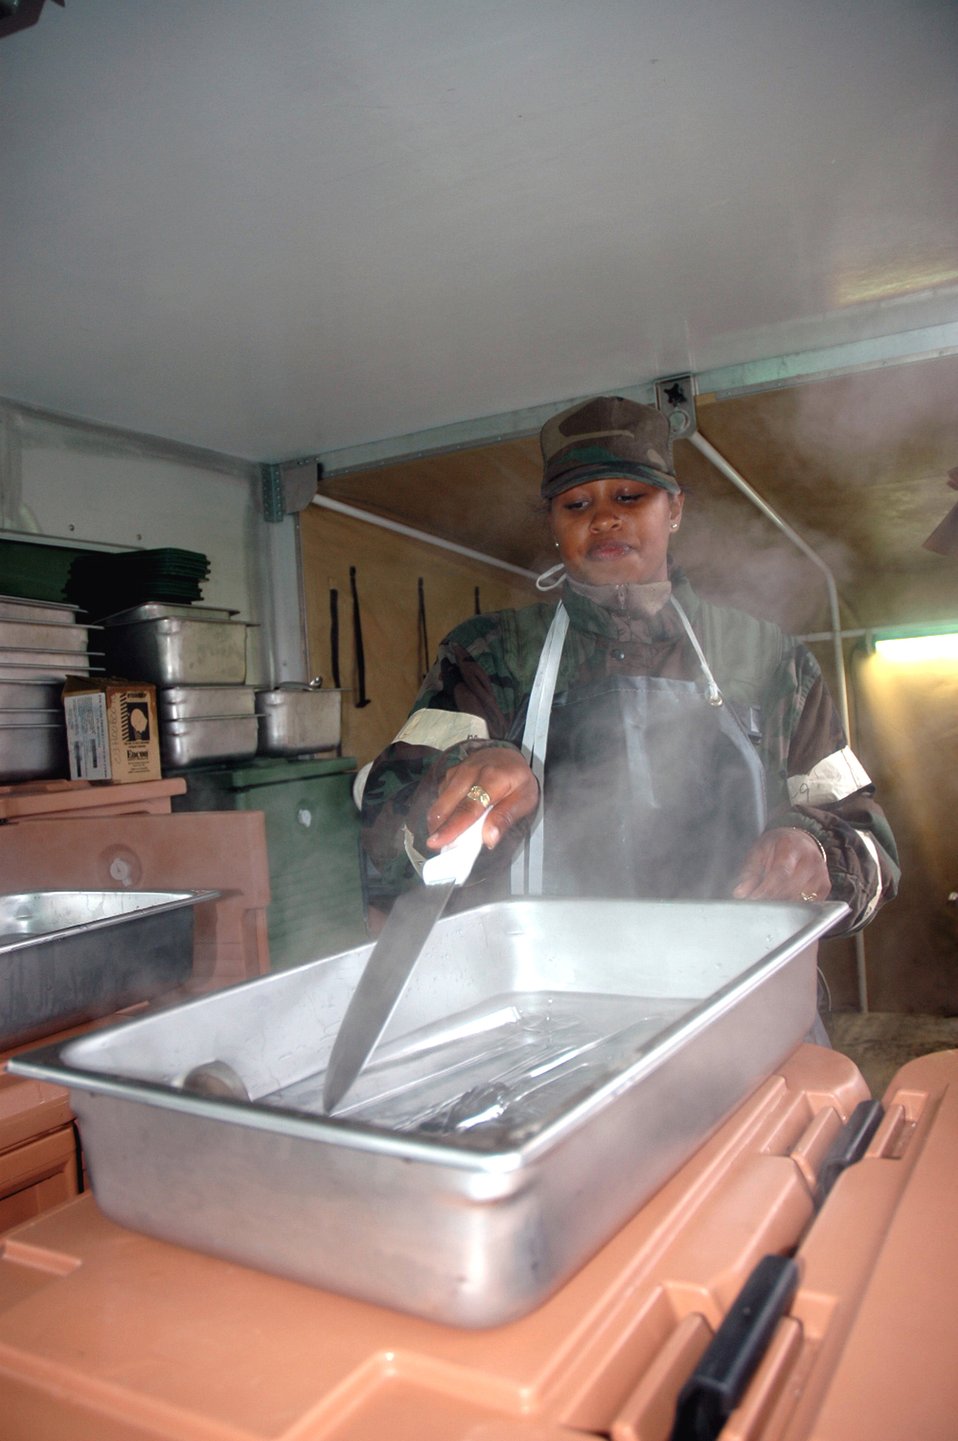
Eagle Flag preps Airmen for combat

Senior Airman Joanna Houston works in a mobile field kitchen preparing hot meals during operations for Air Force Exercise Eagle Flag 07-1 Oct. 17 at Naval Air Engineering Station Lakehurst, N.J. Airman Houston was one of more than 400 Airmen participating in the exercise that tests expeditionary combat support skills. The exercise is operated by the Air Mobility Warfare Center's 421st Combat Training Squadron at Fort Dix, N.J. Airman Houston is a services journeyman from the 5th Services Squadron, Minot Air Force Base, N.D.